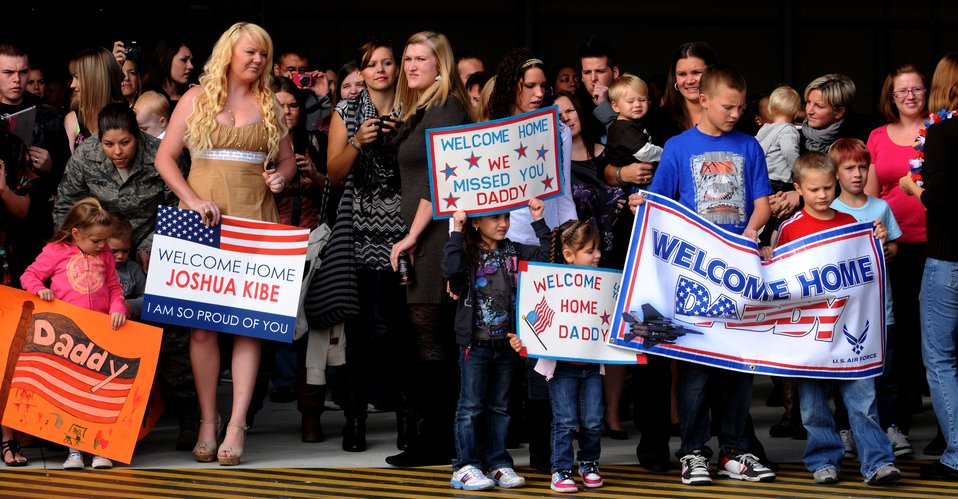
Returning home

Families, friends and coworkers wait for members of the 555th Fighter Squadron to return from deployment Oct. 24, 2011, at Aviano Air Base, Italy. The 555th FS was deployed to Afghanistan for six months.